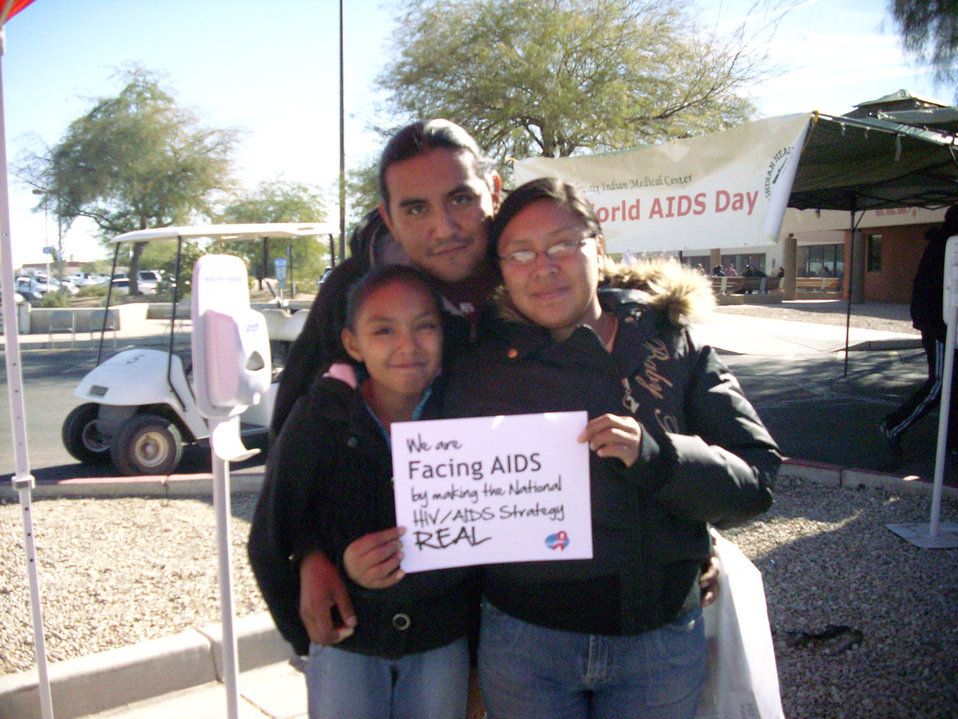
We are Facing AIDS through NHAS-21